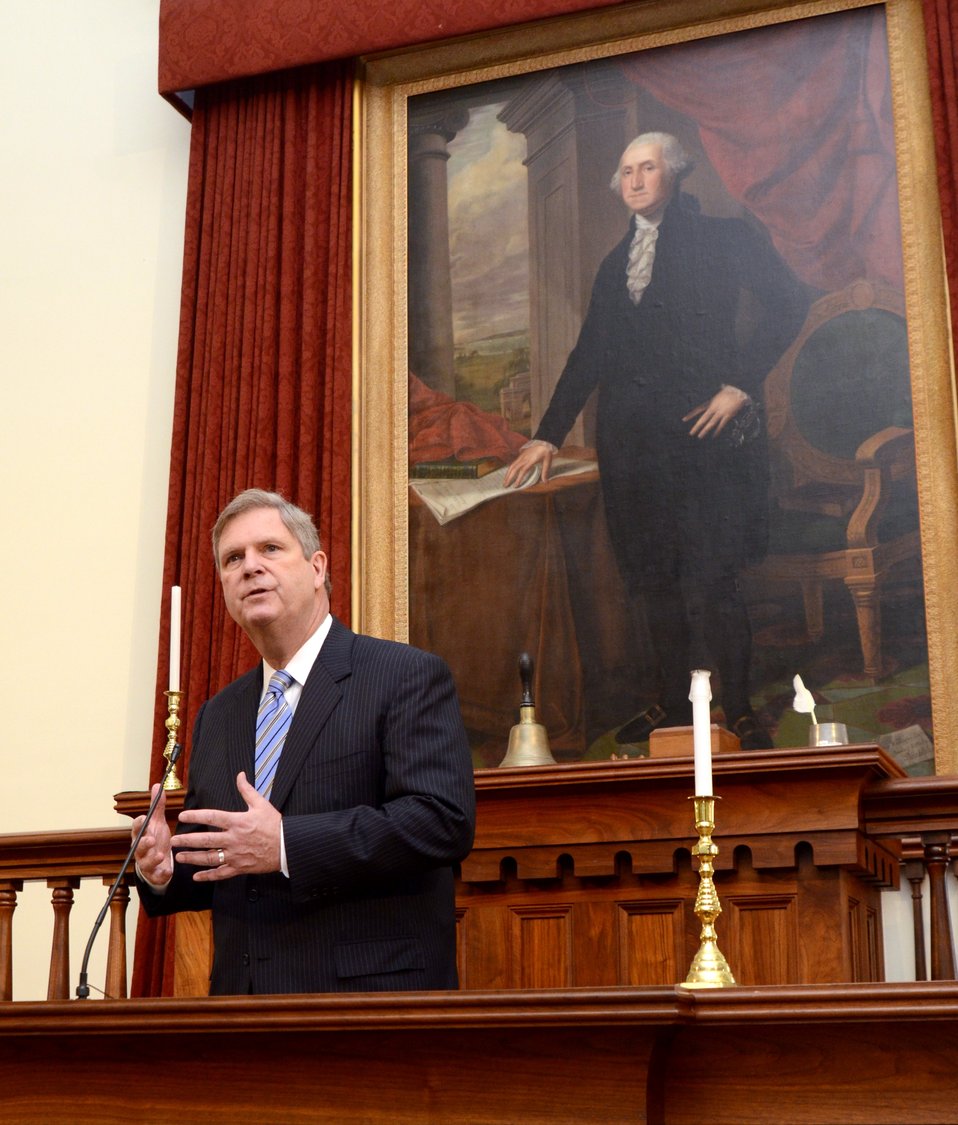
Agriculture Secretary Tom Vilsack speaking at the Old State Capitol in Springfield, IL, to commemorate the 150th Anniversary of the creation of the U.S. Department of Agriculture on Wednesday, November 2, 2011.